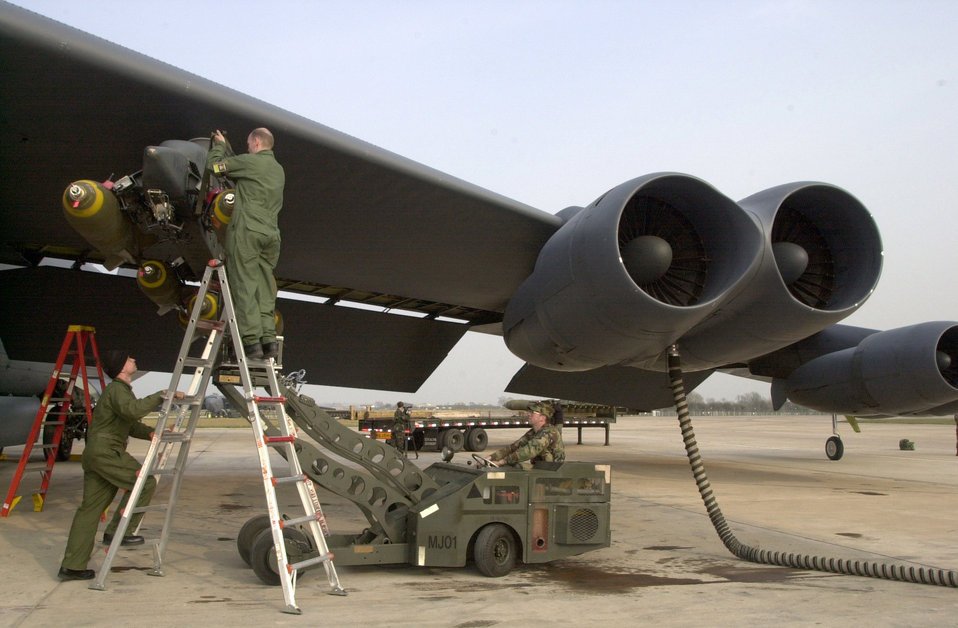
Downloading

OPERATION IRAQI FREEDOM -- Staff Sgt. Roland Scott, Staff Sgt. Jason Smith and Senior Airman Dino Dan download M-117s from a B-52 Stratofortress at a forward-deployed location. These three weapons loaders are currently deployed from Minot Air Force Base, N.D. They are currently assigned to the 457th Air Expeditionary Group which has been positioned to support Operation Iraqi Freedom.